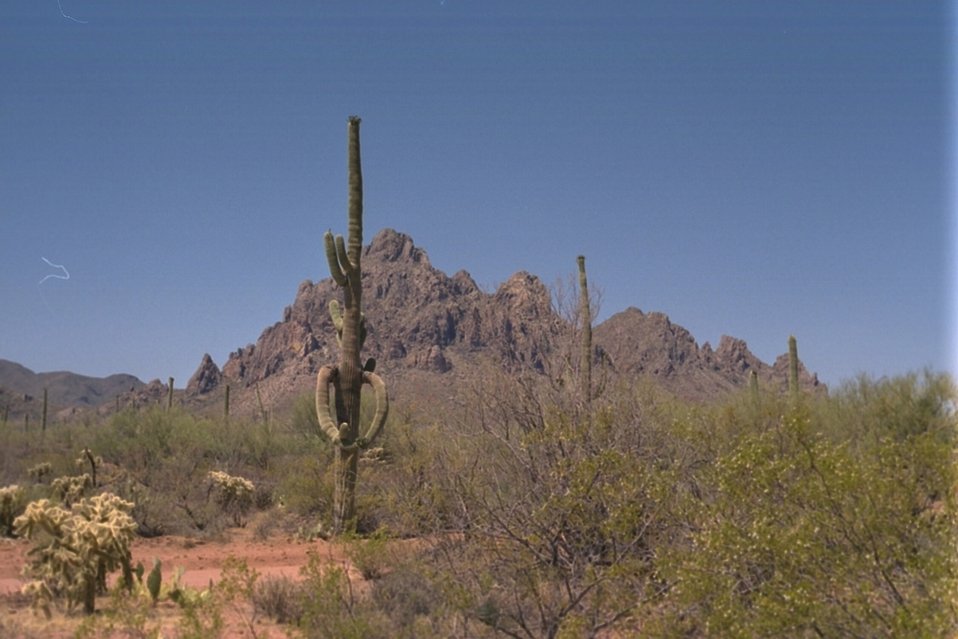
Saguaro standing tall with the Ragged Top Mountain, described as the biological and geological crown jewel of the Silver Bell Mountains.